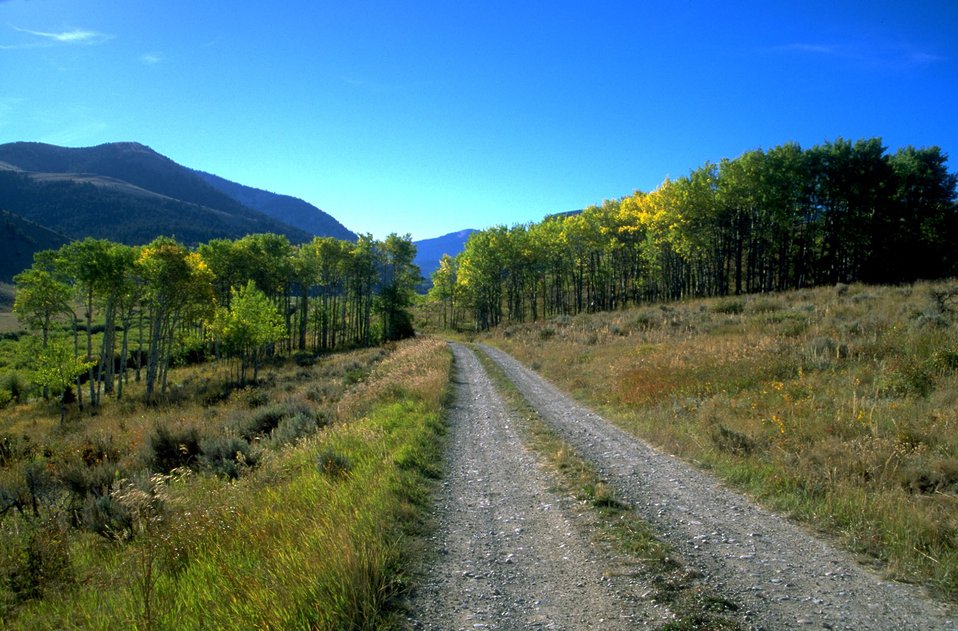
Road leading into Aspen patch